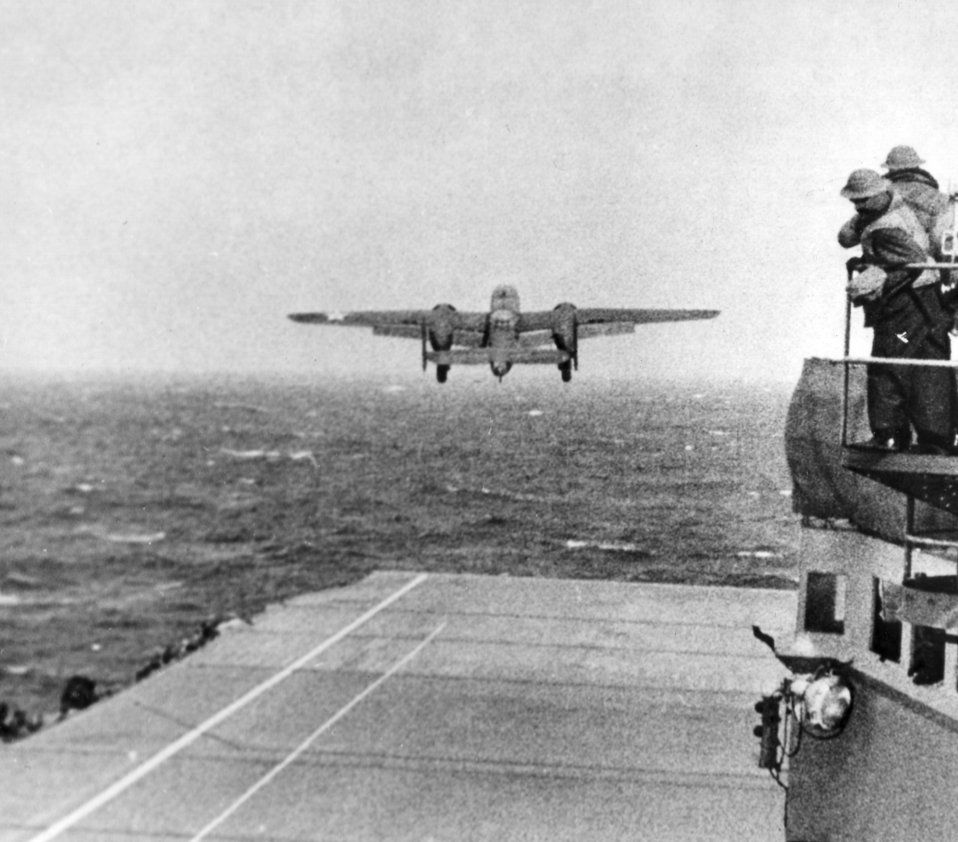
Doolittle Raid

Taken from the deck of the USS Hornet (CV-8), a B-25 bomber makes its way to be part of the first U.S. air raid on Japan.